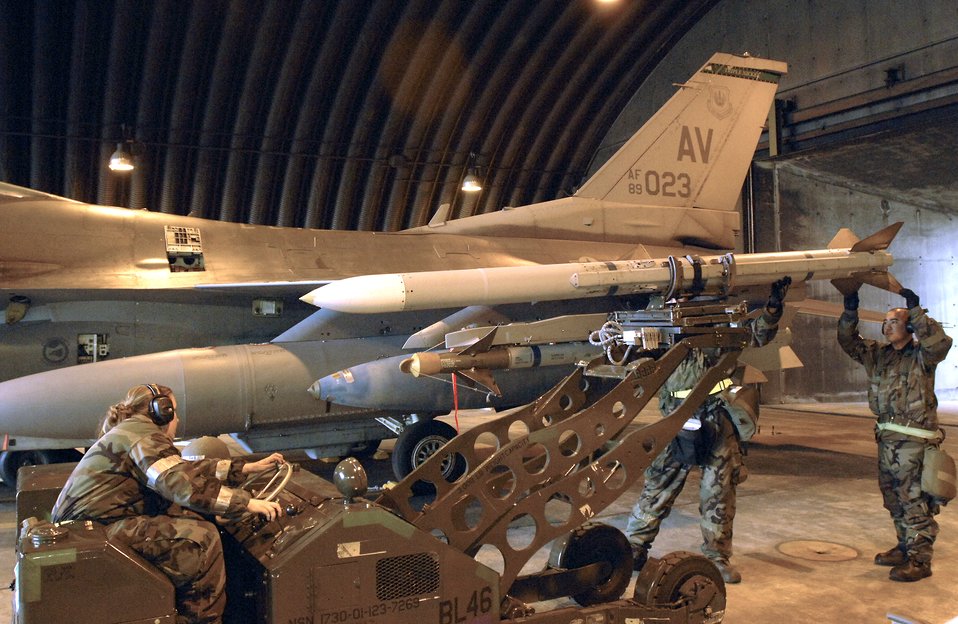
Airmen from the 31st Aircraft Maintenance Squadron load a missile onto an F-16 Fighting Falcon March 8 during a NATO Tactical Evaluation at Aviano Air Base, Italy. The evaluation is to determine if Aviano's 31st Fighter Wing is prepared to support NATO Response Force 9/10.